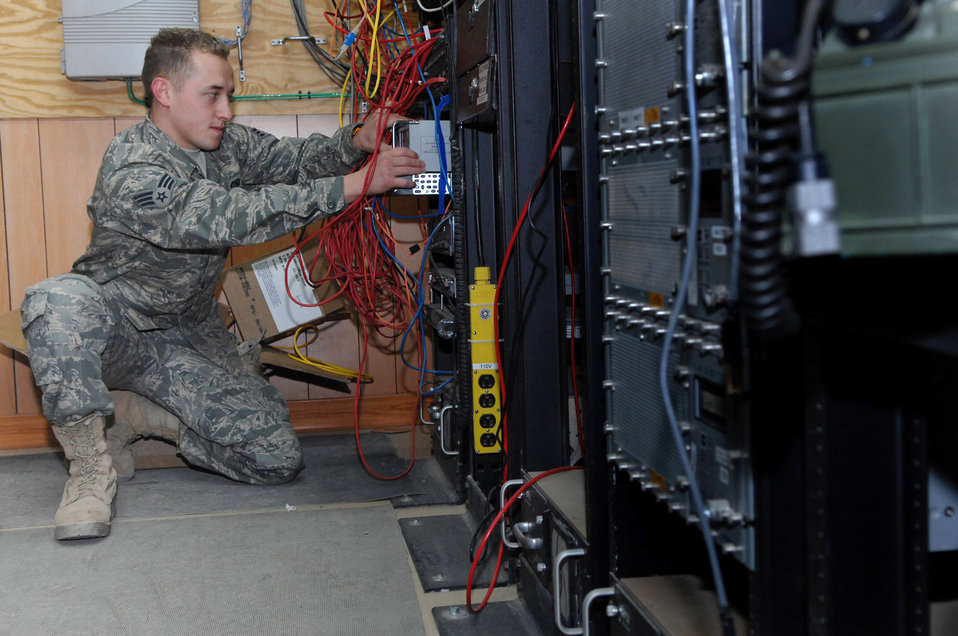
Trouble can't hide

Senior Airman Zachary Felten configures an encryption device which receives unsecured signals and converts them to secure signals Jan. 22 at Balad Air Base, Iraq. Air Control Squadron communications Airmen maintain the systems that monitor combat air space. Airman Felten is a 727th Expeditionary Air Control Squadron tech controller deployed from Eglin Air Force Base, Fla.